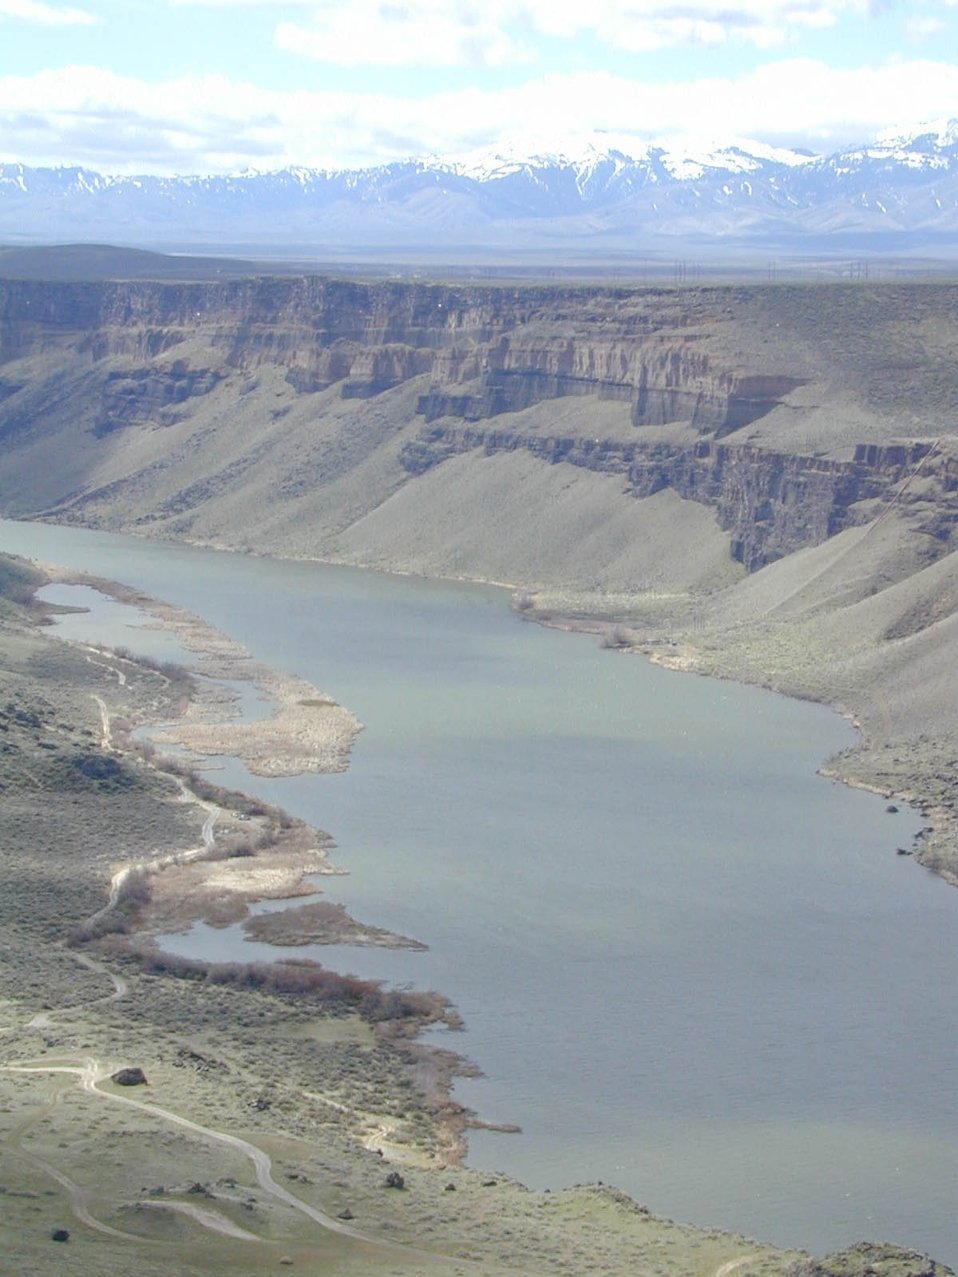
Scenic Snake River Birds of Prey National Conservation Area Lower Snake River District LSRD Snake River Canyon